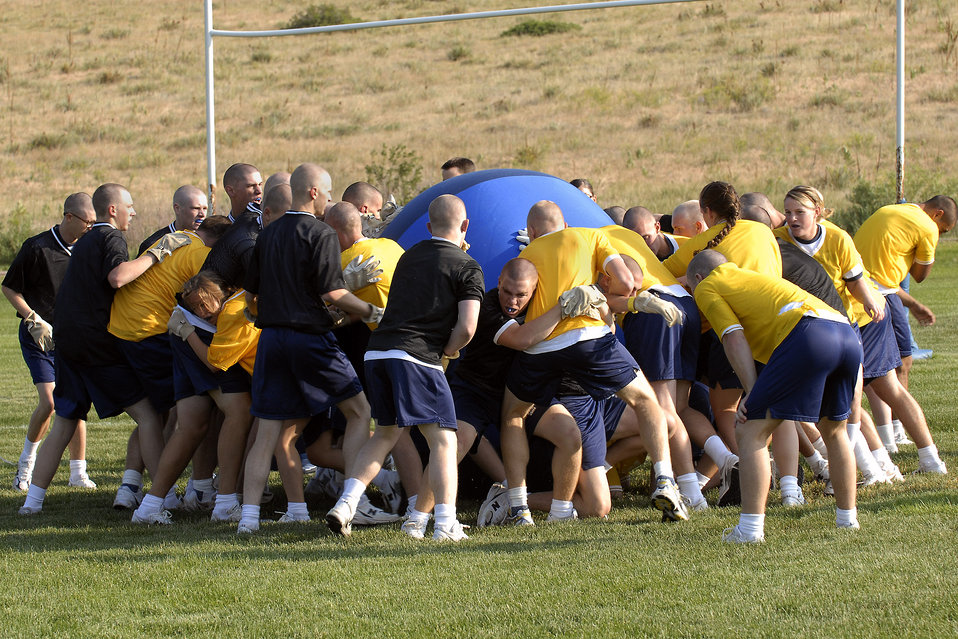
Academy basic cadets team up for Field Day

U.S. Air Force Academy basic cadet trainees engage in a game of pushball during Field Day July 12 at the Academy's athletic fields in Colorado Springs, Colo. After being greeted by Academy leaders, they competed in various athletic events, and closed out the morning with a parachute demonstration by the Academy's Wings of Blue parachute demonstration and competition team.